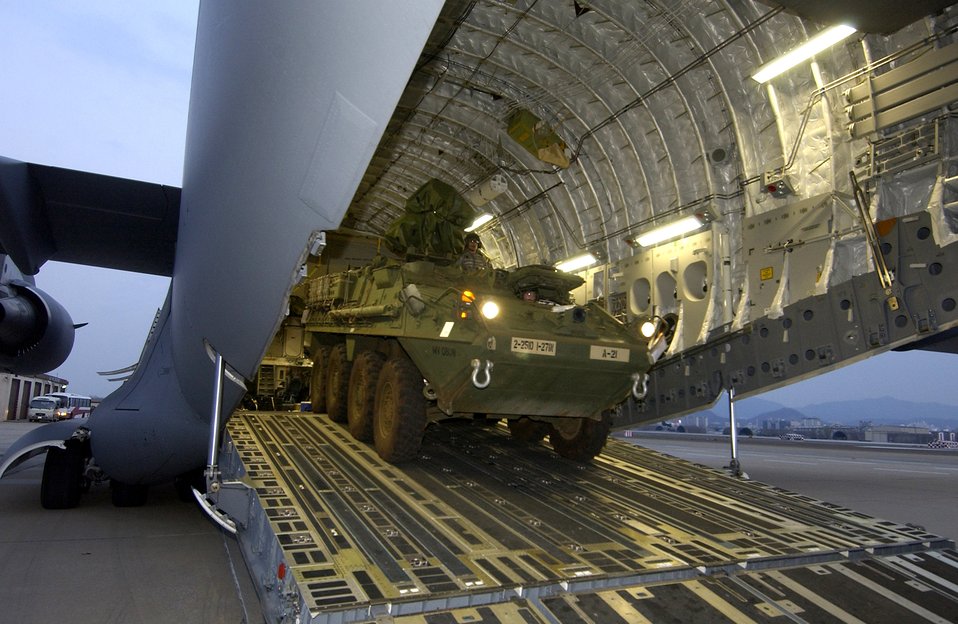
Globemaster delivers to Foal Eagle 2007

Soldiers from the 27th Infantry Division offload an M1126 Stryker infantry carrier vehicle from a C-17 Globemaster III March 18 in Daegu, South Korea, for Exercise Foal Eagle 2007. The focus of the exercise is on strategic, operational and tactical aspects of general military operations in the Korean theater of operations. Its intent is to demonstrate resolve to support the Republic of Korea against external aggression while improving ROK - U.S. combat readiness and joint and combined interoperability. The C-17 is from the 15th Airlift Wing at Hickam Air Force Base, Hawaii.